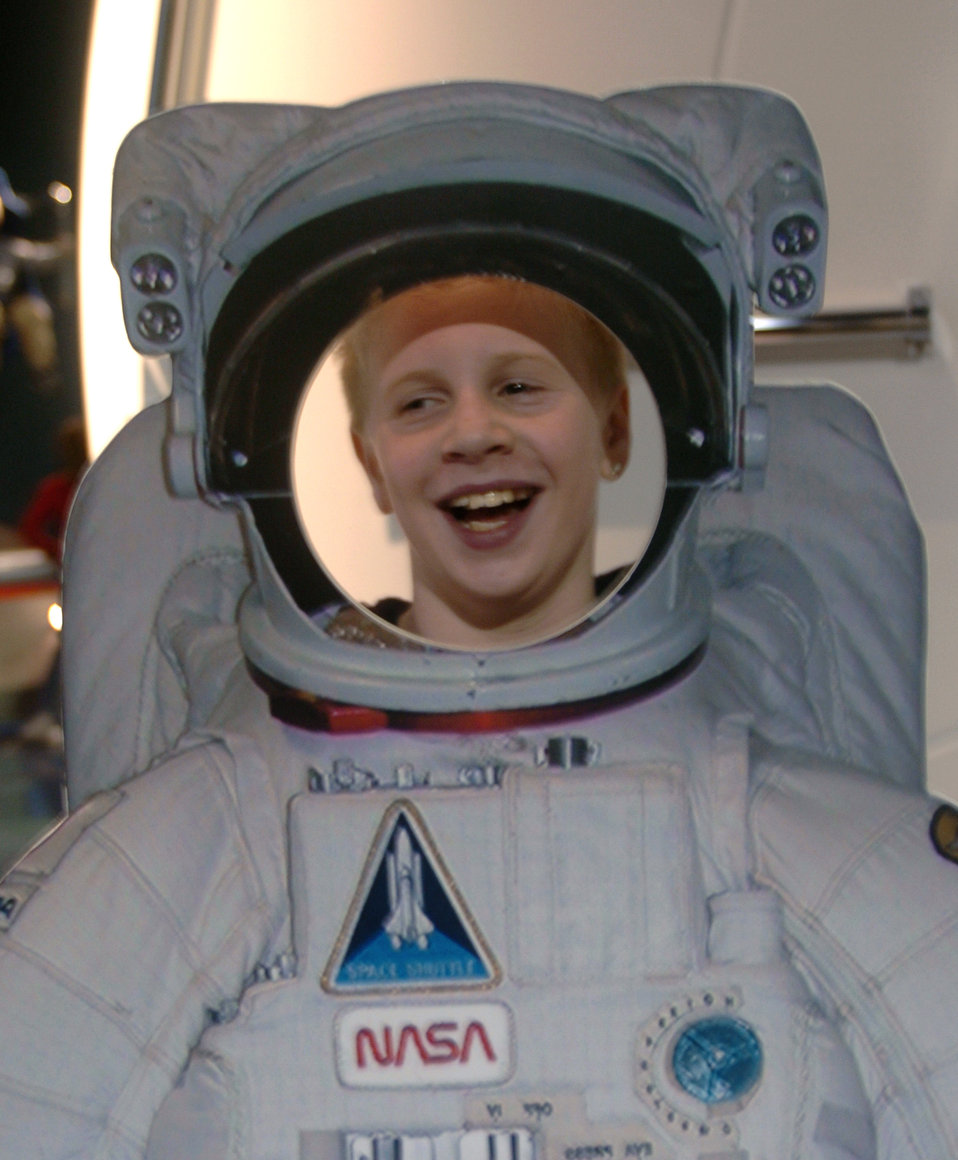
To the moon!

TOKYO -- Tyler Plourde stands behind an astronaut-shaped cut-out during a field trip to Tamarokuto Science Center here Feb. 3. The center offers a wide variety of exhibitions about the sciences of living environment, earth, life, body, and space. Tyler is a fifth-grader at nearby Yokota Air Base.